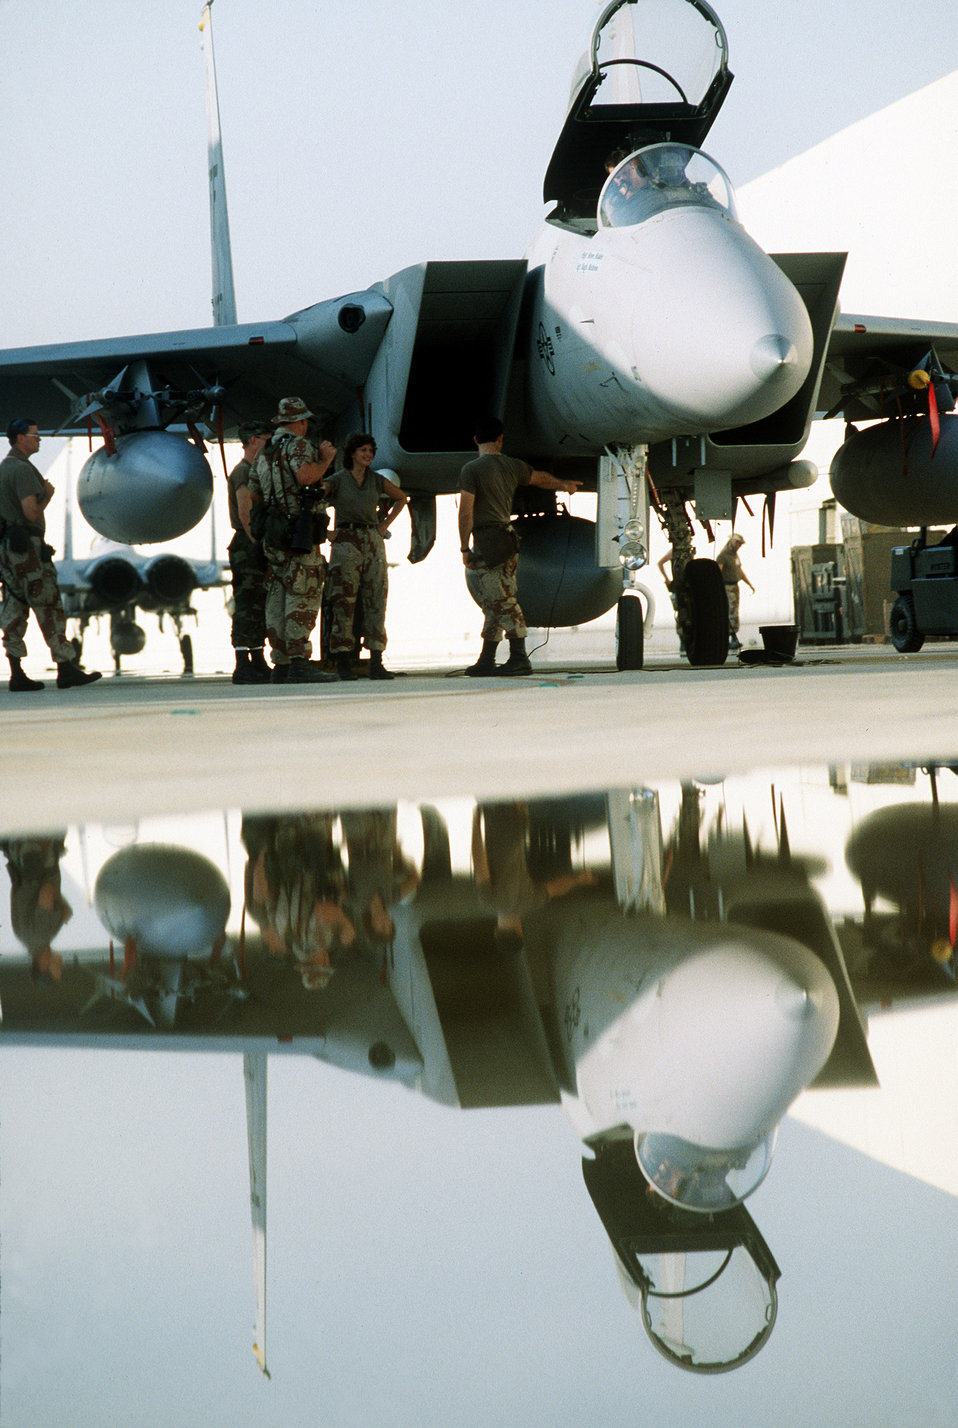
F-15C Eagle aircraft

1990's -- A combat photographer and ground crew members stand beside a 1st Tactical Fighter Wing F-15C Eagle aircraft, armed with AIM-9 Sidewinder and AIM-7 Sparrow missiles, during Operation Desert Shield.